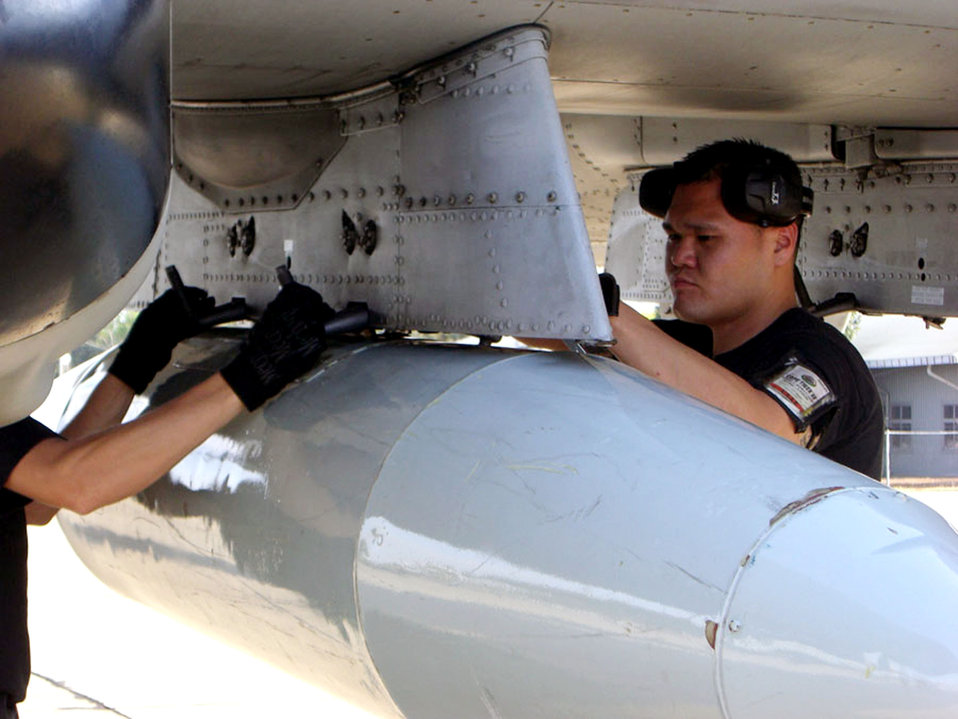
PACAF Airmen combat-train with Thailand, Singapore

Senior Airman Paul Tamura downloads travel pods from an A-10 Thunderbolt II after its arrival Jan. 27 at the Korat Royal Thai Air Base, Thailand, from Osan Air Base, South Korea. Six A-10s from the 25th Fighter Squadron arrived in Thailand to participate in Exercise Cope Tiger 2008. Airman Tamura is a weapons load crew member in the 51st Aircraft Maintenance Squadron of the 51st Fighter Wing, at Osan AB. The Thai-, Singaporean- and U.S.-hosted exercise enhances combined readiness and interoperability, reinforces U.S. commitment to the Southeast Asian region and demonstrates U.S. capability to project combined and joint forces strategically in a multilateral environment.